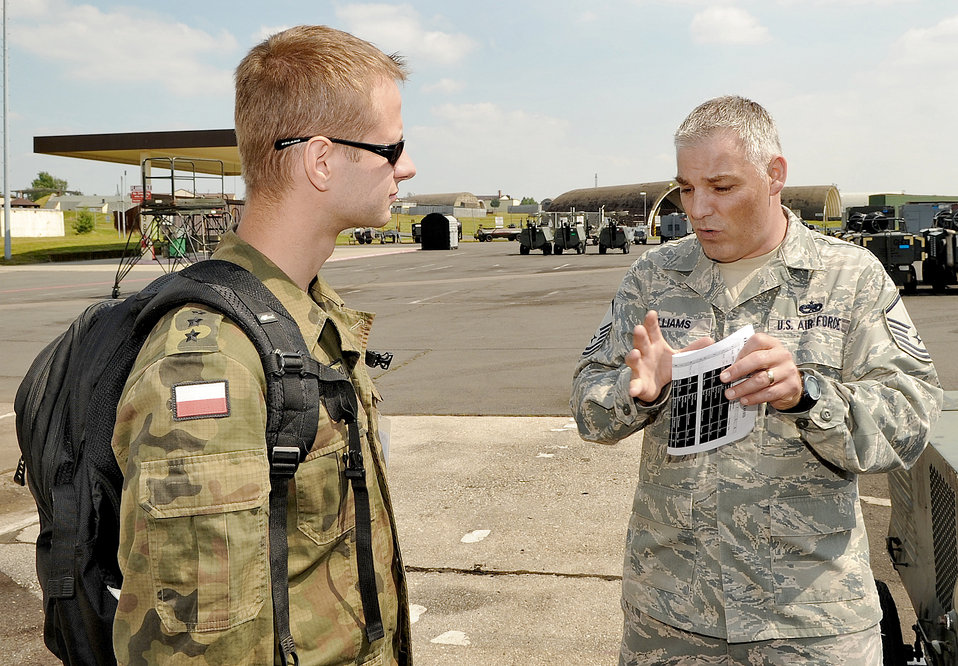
Polish team observes inspection

Master Sgt. Jason Williams gives a flightline tour to Polish air force Lt. Mariusz Choszczewski during a U.S. Air Forces in Europe Operational Readiness Inspection June 23, 2010 at Spangdahlem Air Base, Germany. Sergeant Williams is the 31st Maintenance Group readiness superintendent at Aviano Air Base, Italy and Lieutenant Choszczewski is assigned to the 32nd Air Tactical Base, Poland.